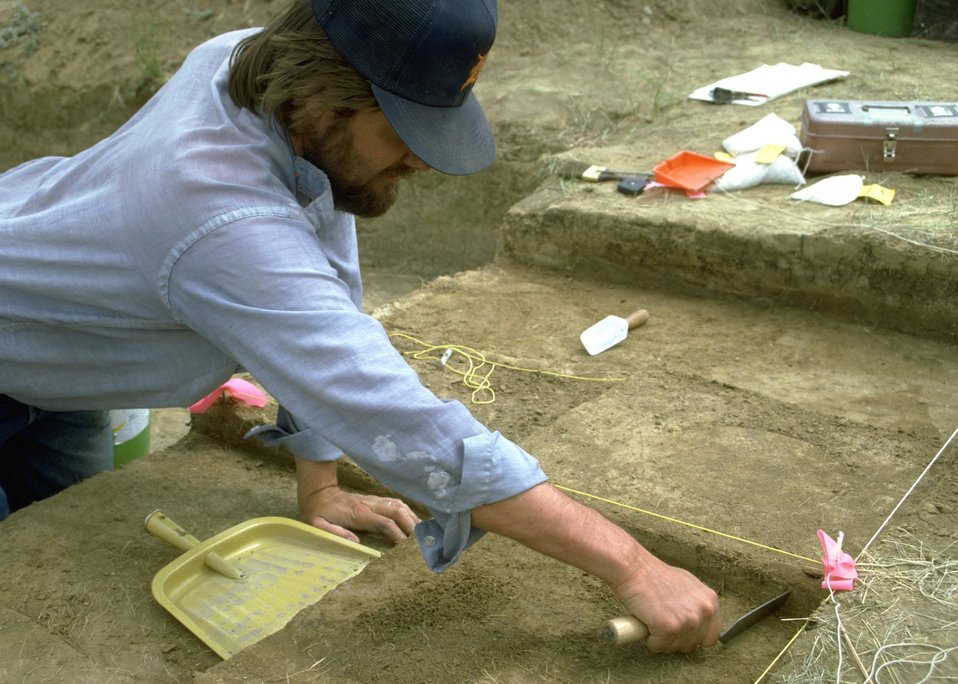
Excavating an unknown area.